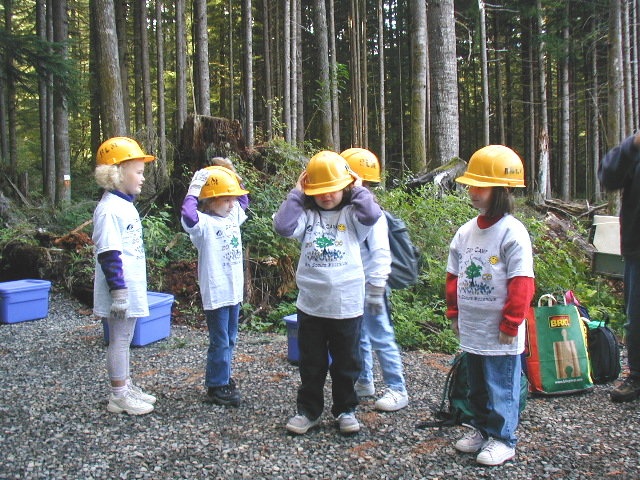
A troop of Brownies from Portland, OR try on their hard hats